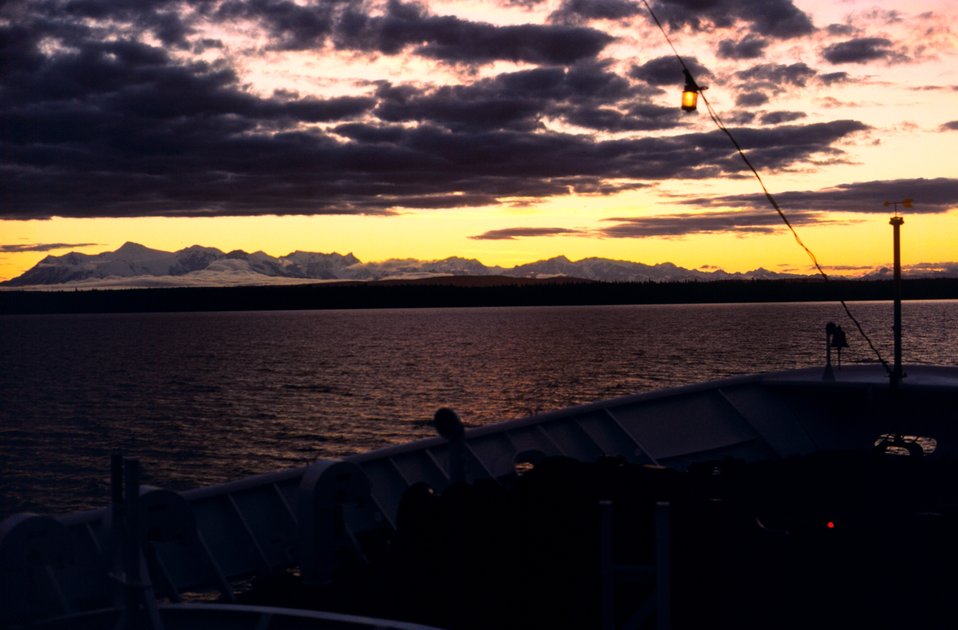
A sunset in Upper Cook Inlet taken from the bow of the FAIRWEATHER.